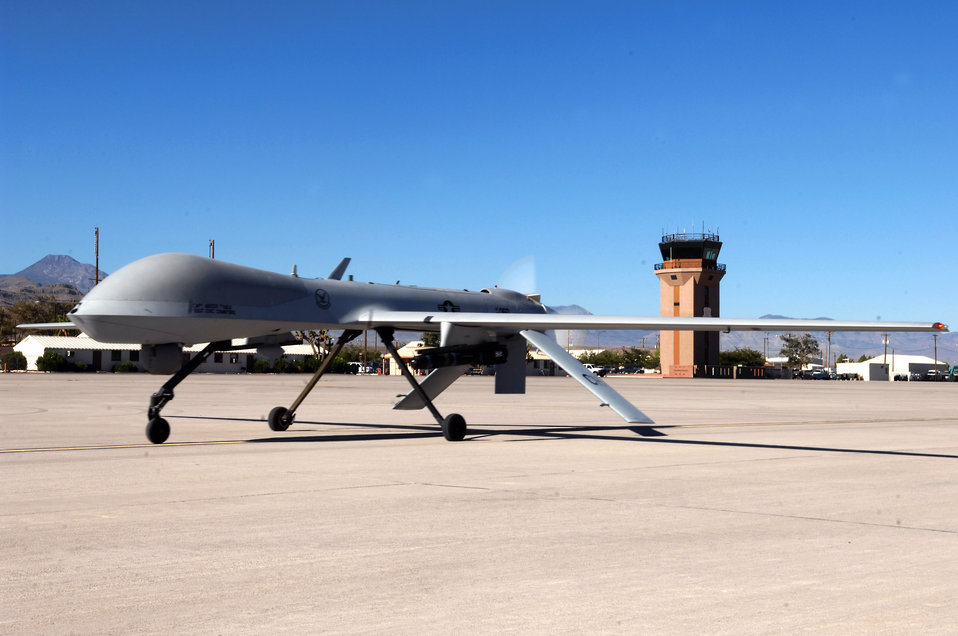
Predator passes 400,000 flight hours

An MQ-1 Predator unmanned aircraft system taxies down a runway Aug. 13 at Creech Air Force Base, Nev. The Predator recently passed 400,000 flight hours during missions over Iraq and Afghanistan.